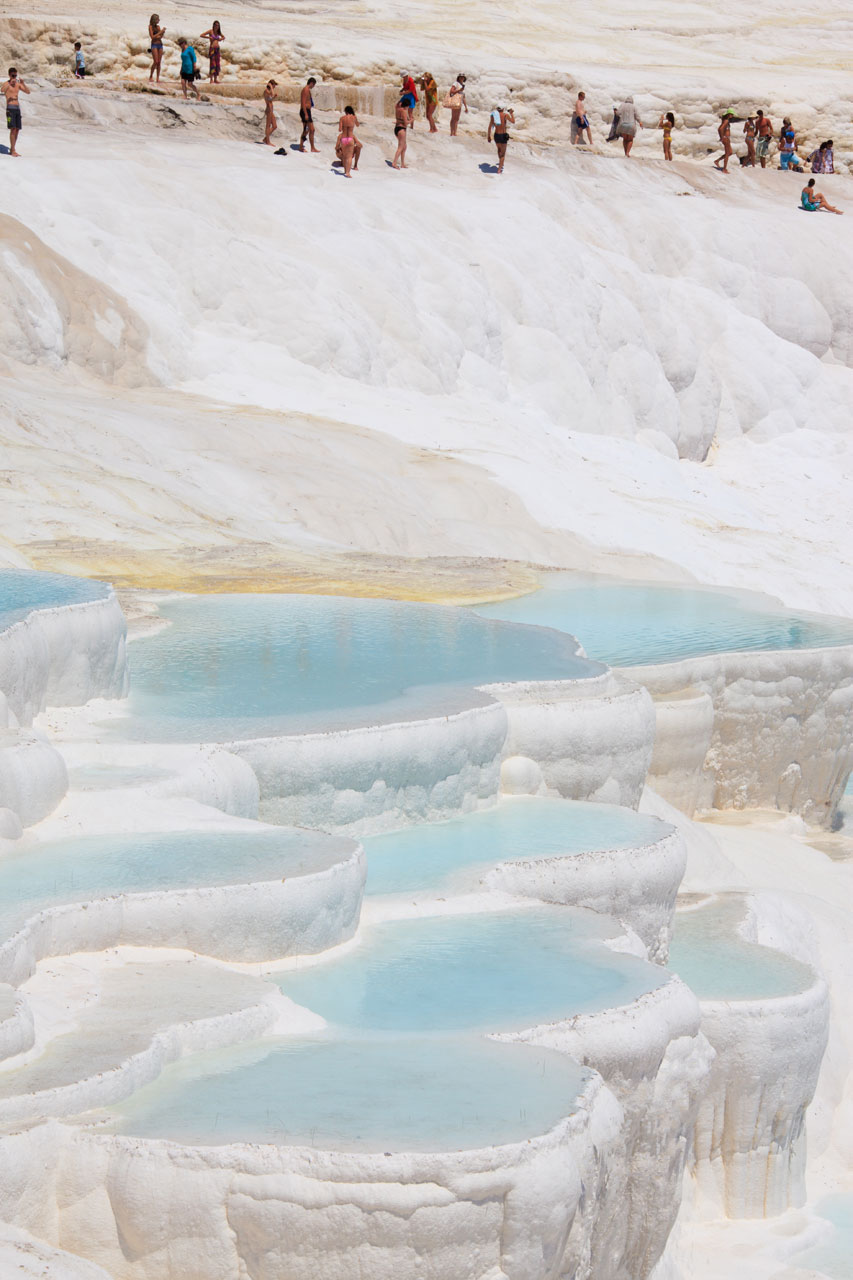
People in pamukkale

People in paddling pools in pamukkale.